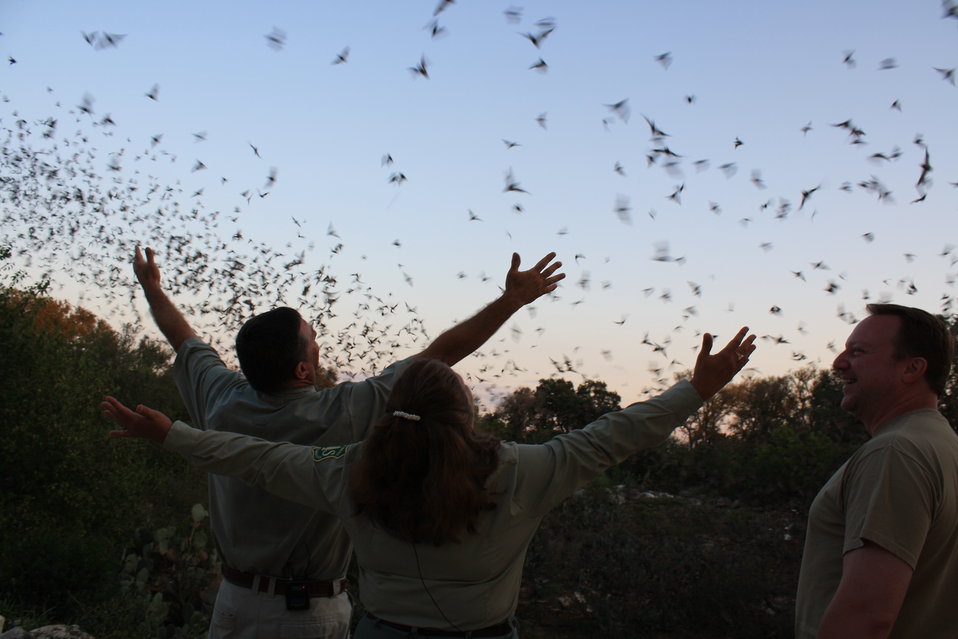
BCI and US Forest Service staff observe bats

BCI and US Forest Service staff marvel at the millions of bats exiting the cave